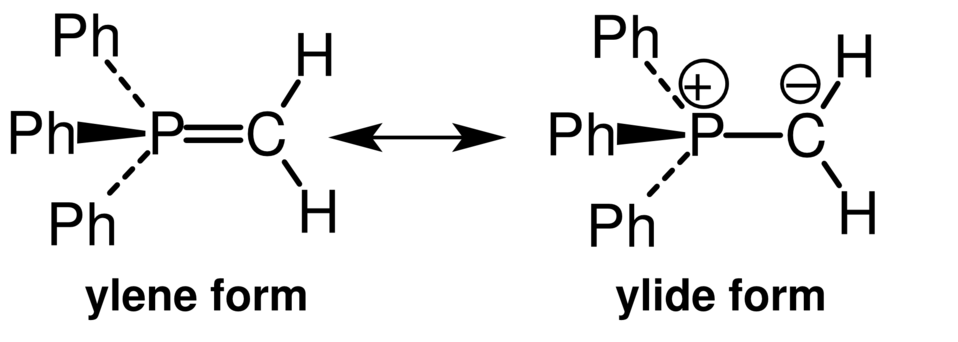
Ylene vs Ylide resonance structures